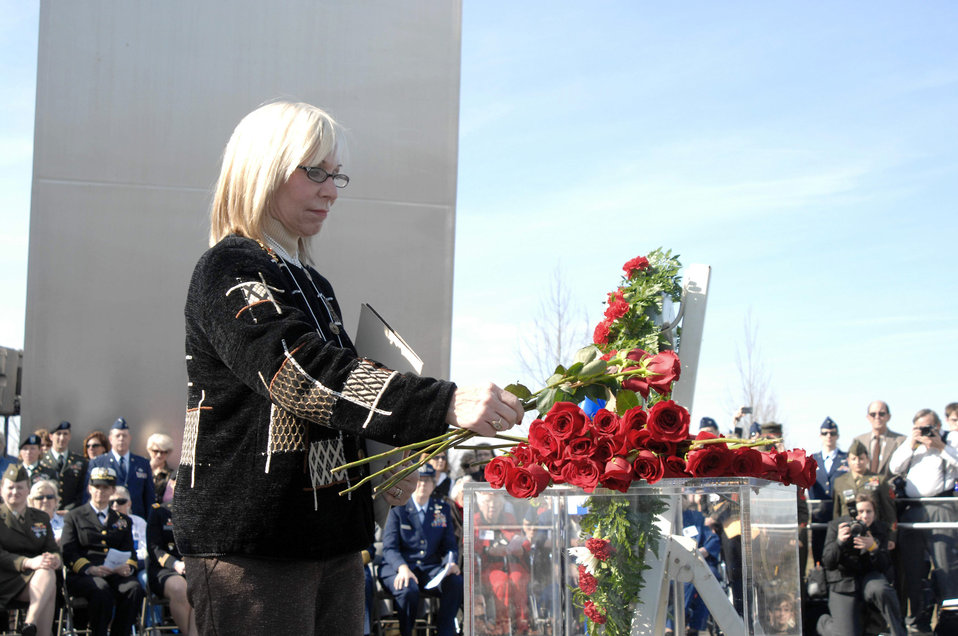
Female World War II pilots lay wreath at Air Force Memorial

A family member of a deceased Women Airforce Service Pilot member places a rose honoring her loved one during a memorial wreath laying ceremony March 9, 2010, in Arlington, Va., for the 38 WASPs who lost their lives in the line of duty.